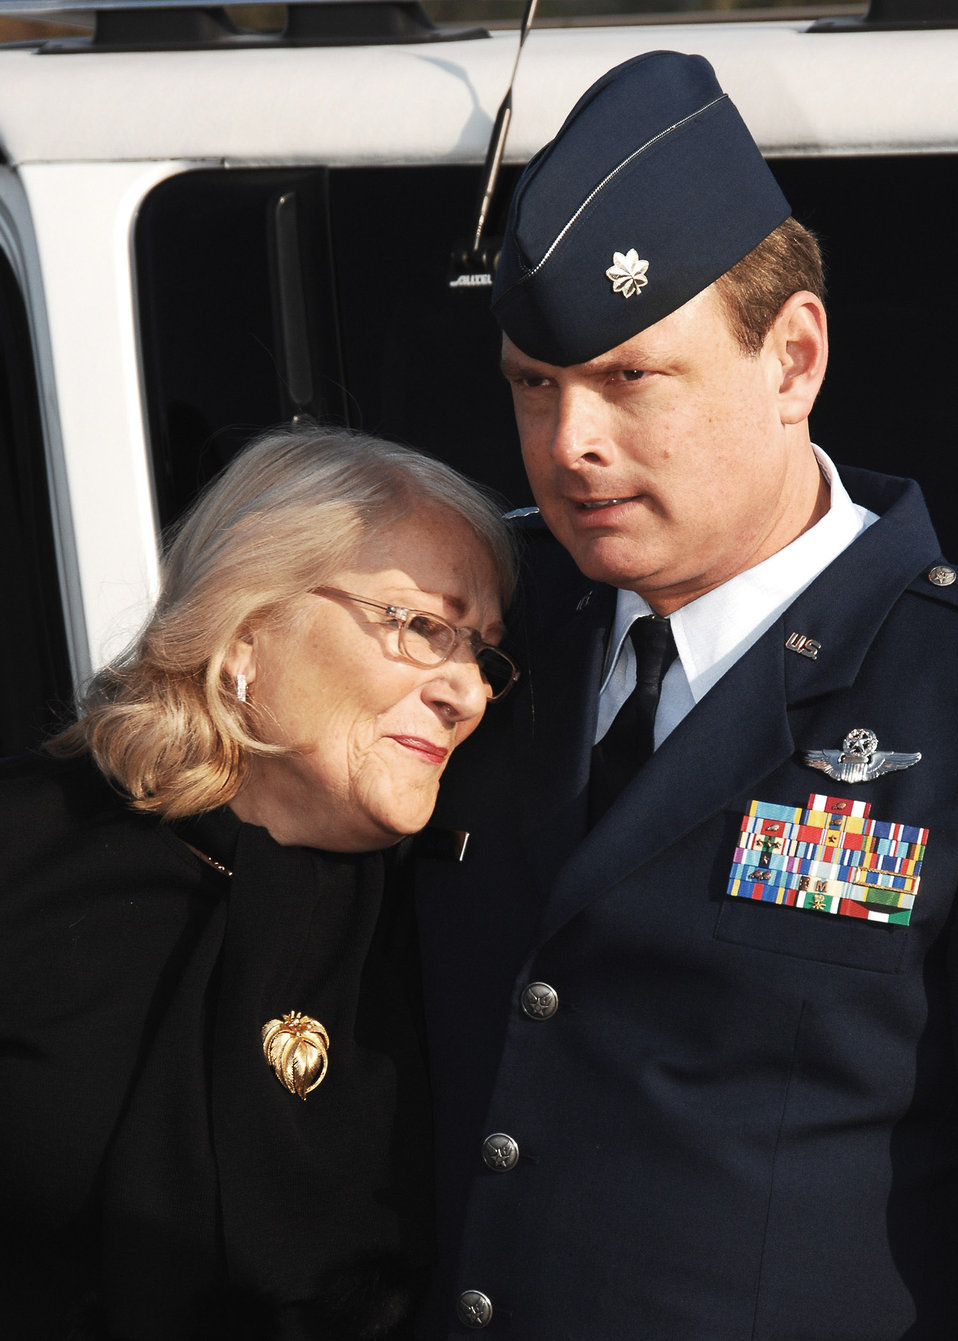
Building dedication honors Airman killed on 9/11

Lt. Col. Chris Clark welcomes Ilse Homer prior to the Operations Building Dedication Oct. 4 at Wright-Patterson Air Force Base, Ohio. Ms. Homer is Maj. LeRoy W. Homer Jr.'s mother. The wing dedicated the building in honor of Major Homer's dedicated service as a citizen Airmen. Major Homer had been assigned to the 445th Airlift Wing from 1995 to 2000 and died Sept. 11, 2001, while serving as the first officer on United Airlines Flight 93. Colonel Clark is the 445th Operations Group deputy commander.